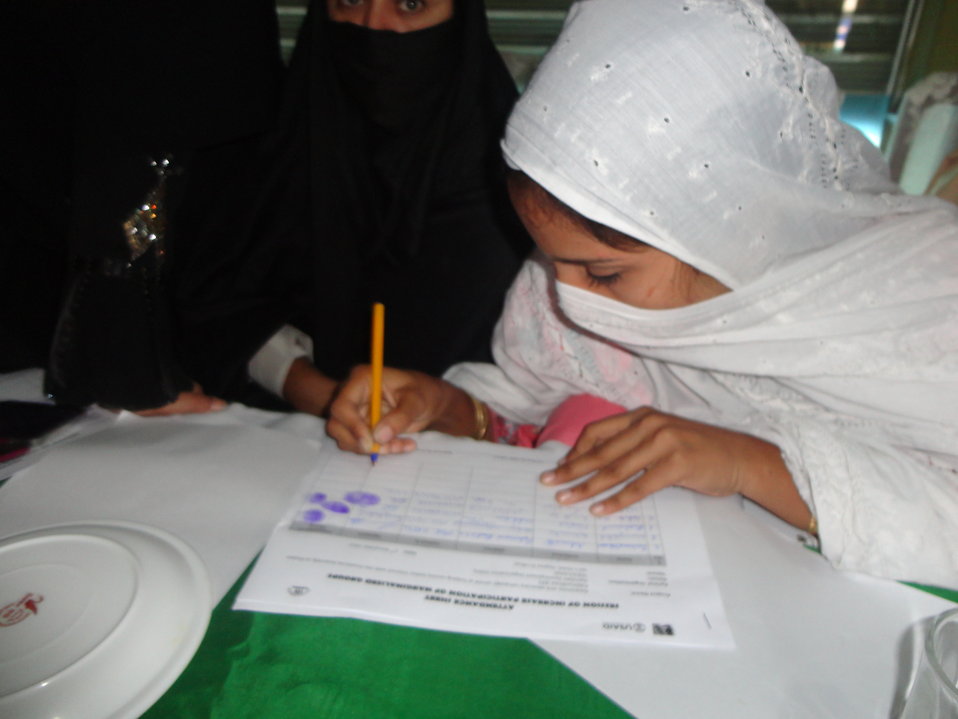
Caption 13 - HamdamDO - KP - Increasing Participation of the Marginalized - Sesson on Citizen Engagement 2

Female participation in the sessions on legislative governance was not an easy milestone to achieve for Hamdam Development Organization (HDO), but women and girls not only participated but showed utmost interest in the advocacy campaign led by HDO.